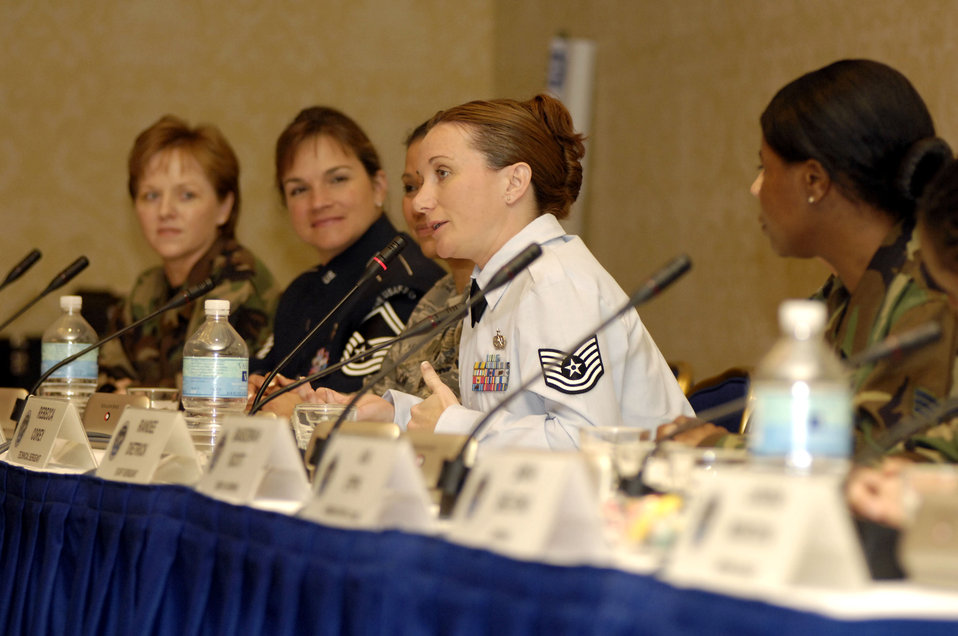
Air chiefs spouses forum

Tech. Sgt. Rebecca Corey fields a question from an air chief's spouse during a forum at the Global Air Chiefs Conference in Washington, D.C., Sept. 26. The Airmen, from various career fields including personnel, judge advocate general, services, pilot and aircraft maintenance, answered questions regarding deployments and balancing families and careers. Topics of particular interest to the foreign spouses included the reputation of the Air Force's quality of life programs. Sergeant Corey is an audiovisual technician from Bolling Air Force Base, D.C.